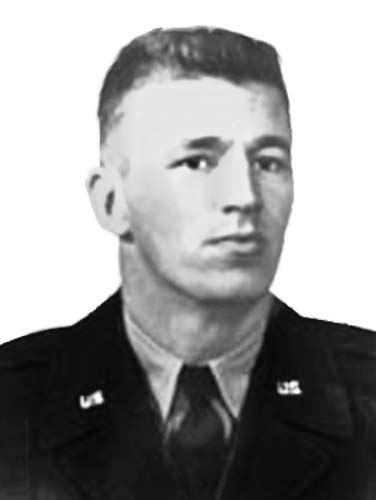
Maj. Charles J. Loring Jr.

1950s -- Maj. Charles J. Loring Jr.